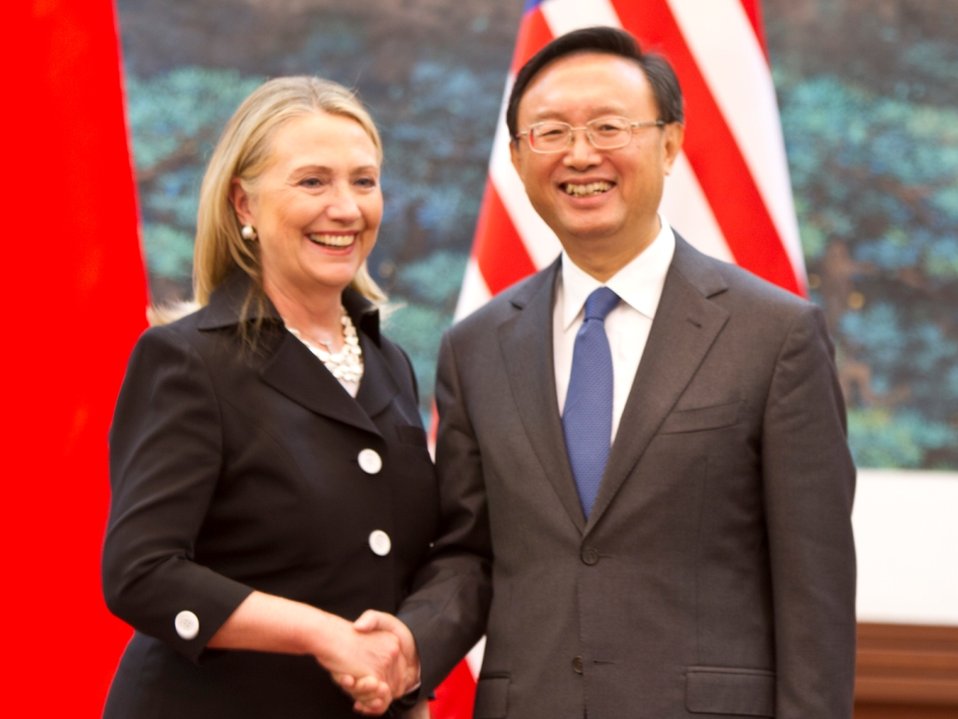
Secretary Clinton Shakes Hands With Chinese Foreign Minister Yang Jiechi

U.S. Secretary of State Hillary Rodham Clinton and Chinese Foreign Minister Yang Jiechi shake hands at end of their joint press conference at the Great Hall of the People in Beijing, China, September 5, 2012.